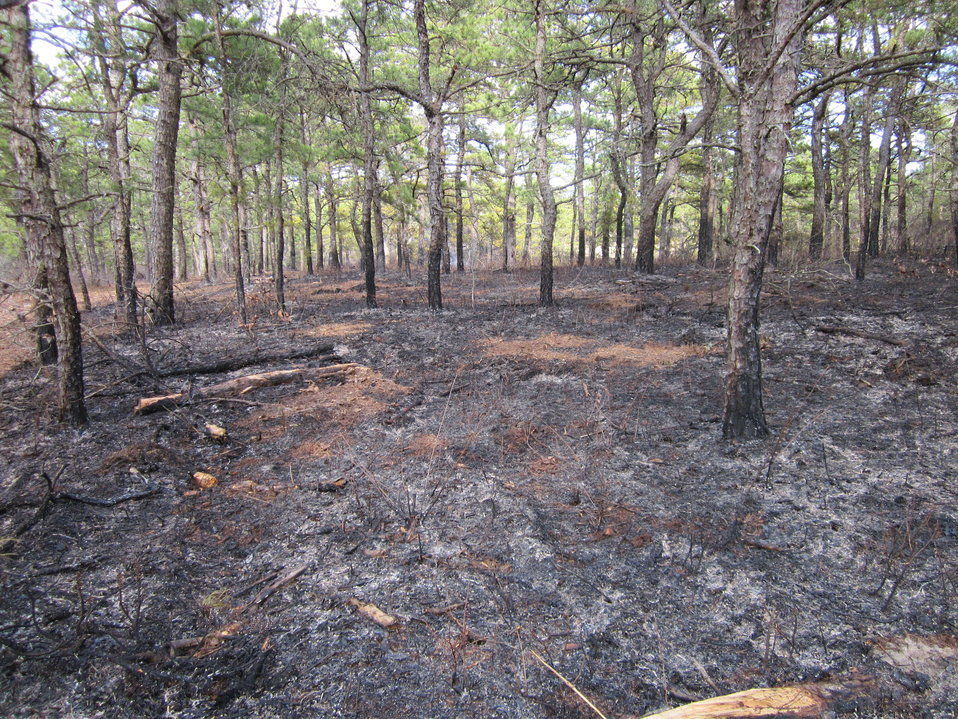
Burn Objectives Met

Mashpee, Massachusetts, April 5, 2012. A controlled burn at the Town of Mashpee Holland Hill Barrens area of Mashpee National Wildlife Refuge helped clear overgrown brush under these pitch pine trees, which will reduce fire risk to neighboring homes. It will also stimulate growth of oak stems, important for the rare New England cottontail. Fire-restistant pines will continue to grow. The burn was conducted by the Town of Mashpee, U.S. Fish and Wildlife Service, State of Massachusetts Department of Conservation and Recreation, and Northeast Forest and Fire Management.